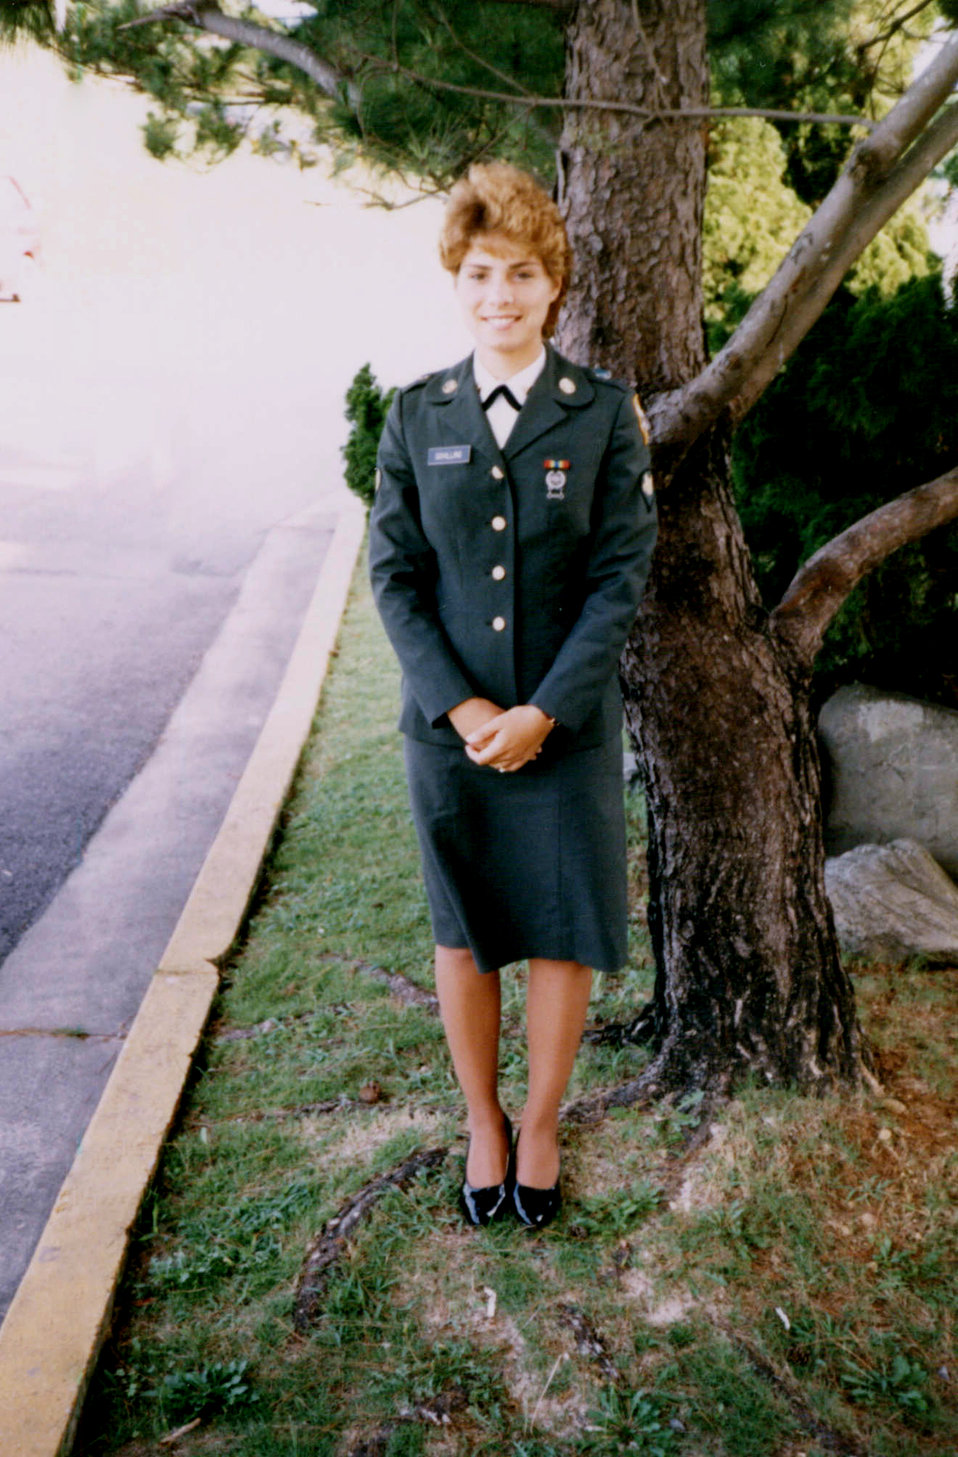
Jeanine Solberg, a Secretary for Ecological Services in Region 3, was stationed as an Intelligence Analyst in the Army in Okinawa, Japan, in 1985She served from 1983 to 1989.